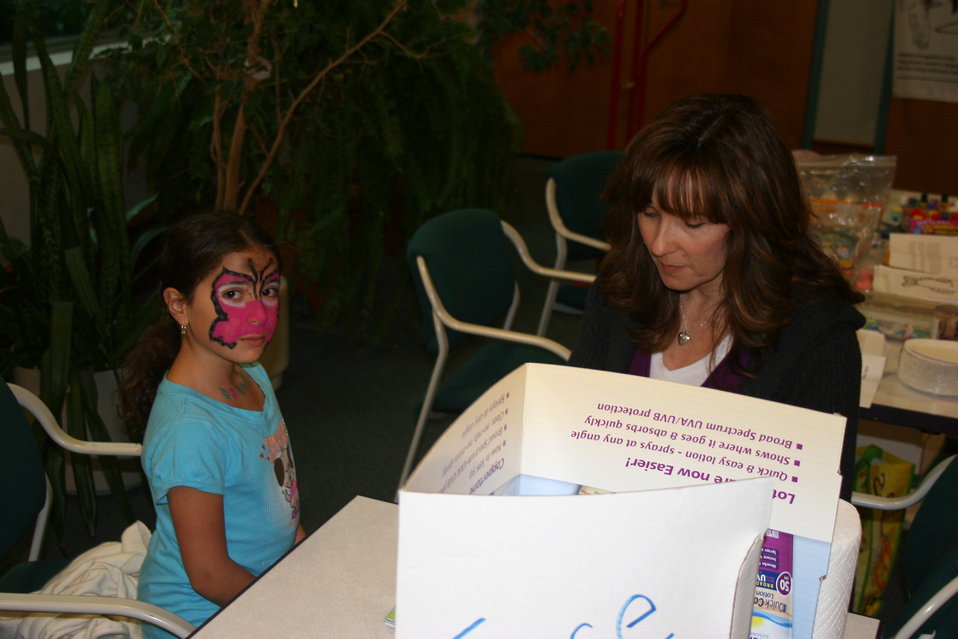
Face painting

Fishing event at U.S. Fish and Wildlife Service Regional Office in Hadley, MA